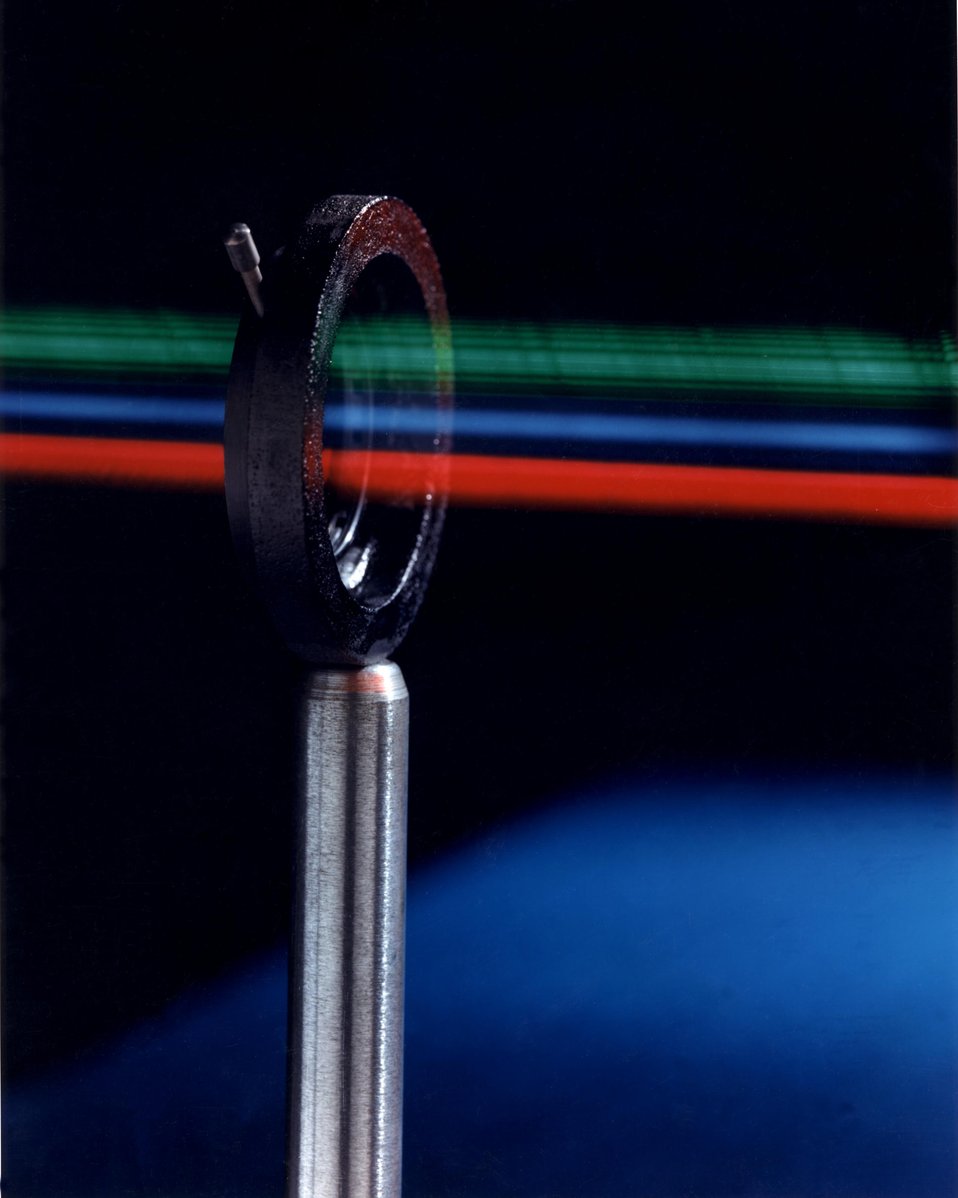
ARGONNE'S ULTRA-SENSITIVE TECHNIQUE FOR DETECTING TRACE AMOUNTS OF IMPURITIES ON MATERIAL SURFACES.
ARGONNE SCIENTISTS HAVE DEVELOPED THE TECHNIQUE KNOWN AS SARISA (SURFACE ANALYSIS BY RESONANCE IONIZATION) IN ORDER TO DETECT TRACE AMOUNTS OF IMPURITIES ON MATERIAL SURFACES. THIS CAPABILITY IS IMPORTANT, PARTICULARLY IN THE MANUFACTURE OF SUPER-MINIATURE SEMICONDUCTORS. THIS METHOD OF MULTI-STEP EXCITATION AVOIDS THE IONIZATION OF BACKGROUND ATOMS, WHICH INTERFERES WITH IMPURITY DETECTION.